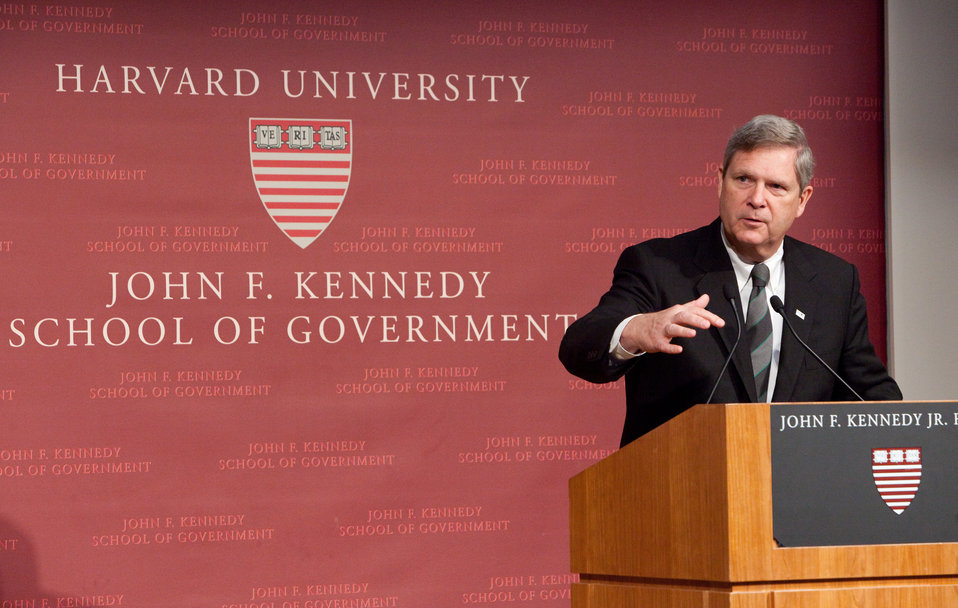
Agriculture Secretary Tom Vilsack speaking at the John F. Kennedy School of Government, at the John F. Kennedy, Jr., Forum at Harvard University in Boston, MA, on Sunday, May 15, 2011.